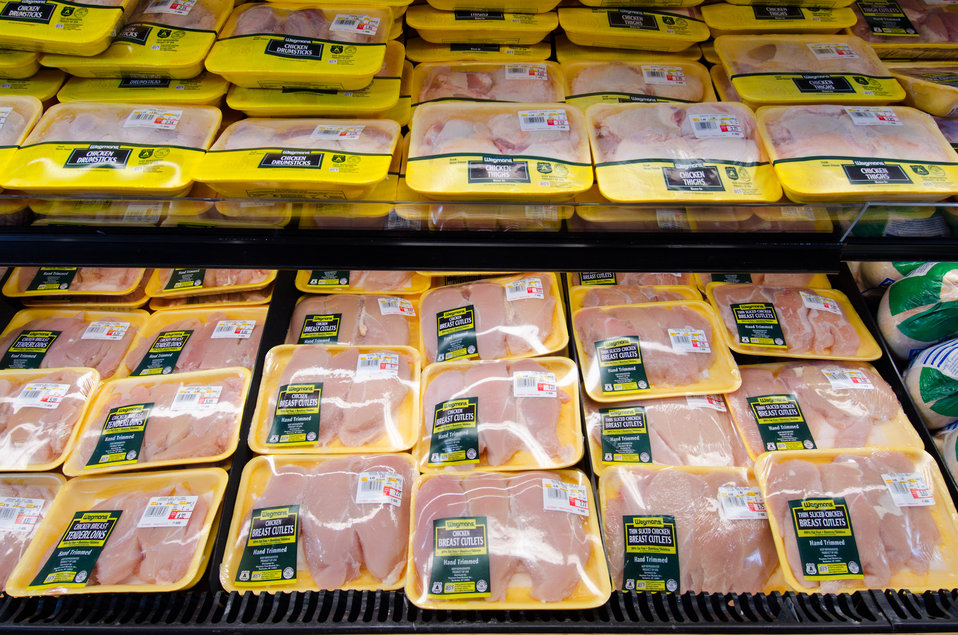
Poultry products at a grocery store in Fairfax, Virginia, on March 3, 2011.